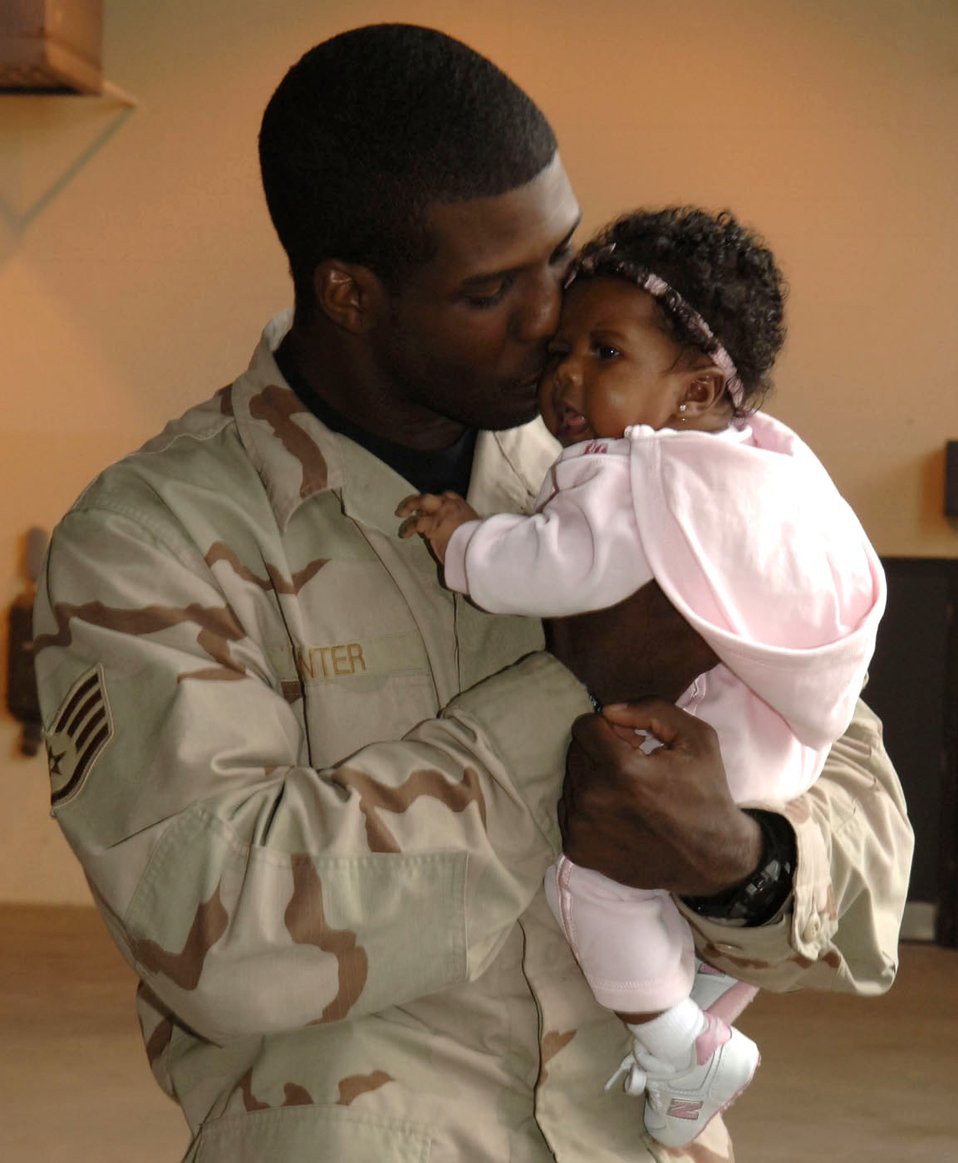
Moody welcomes SFS Airmen home for holidays

Staff Sgt. Corodney Hunter holds his daughter Jamari at the security forces homecoming ceremony Dec. 14 at Moody Air Force Base, Ga. Deployed members from the 820th Security Forces Group, 23rd SFS and Texas Air National Guard returned home early from their deployment in order to spend the holidays with family and friends. Sergeant Hunter is assigned to the 824th Security Forces Squadron here.